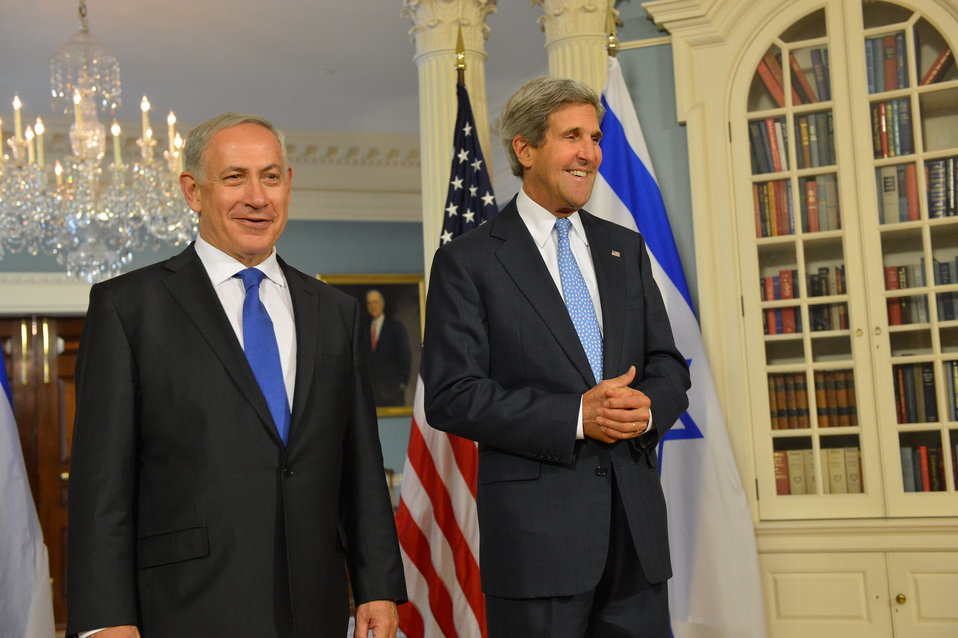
Secretary Kerry Meets With Israeli Prime Minister Netanyahu

U.S. Secretary of State John Kerry meets with Israeli Prime Minister Benjamin Netanyahu at the U.S. Department of State in Washington, D.C., on September 30, 2013.